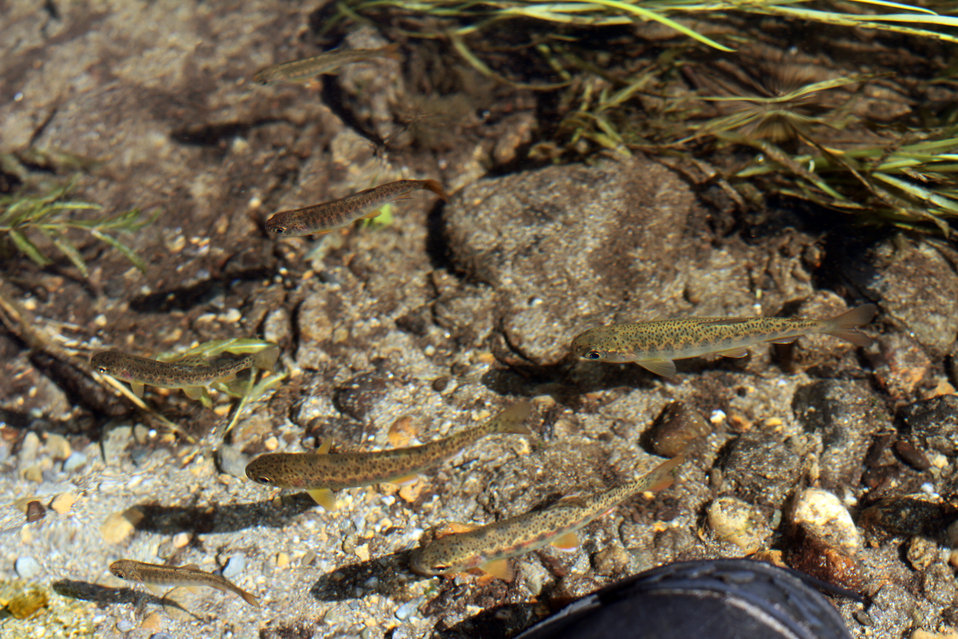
juvenile coho salmon and rainbow trout, Fish Creek Alaska

USFWS/Katrina Mueller